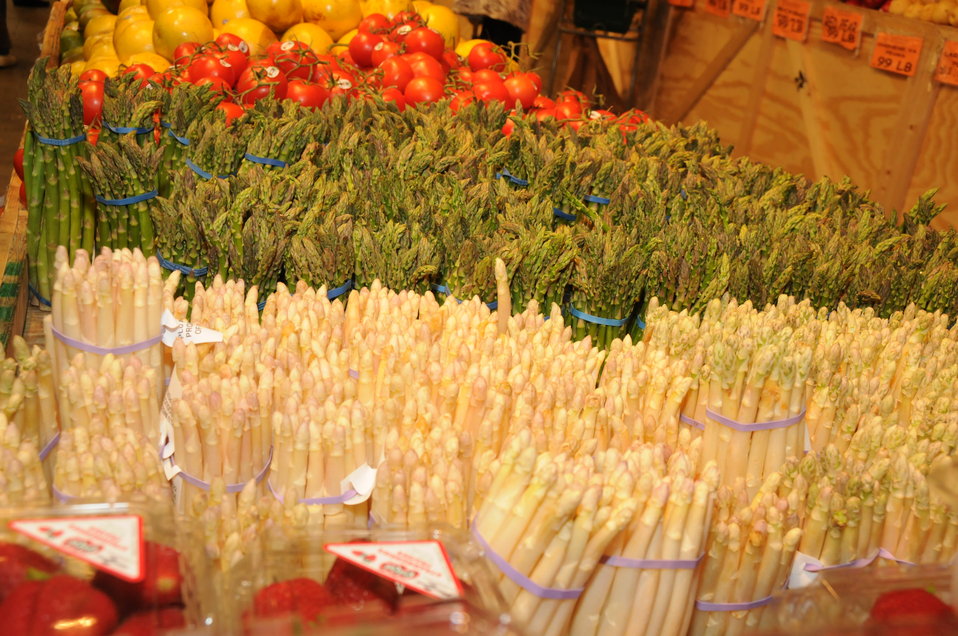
The Reading Terminal Market offers produce fresh from the field to the people of Philadelphia, PA on April 3, 2009. There are Amish specialties, fruits, vegetables, meats, seafood, and poultry. Reading Terminal Market opened for business in 1892 with approximately 78,000 square feet and almost 800 spaces for vendors. The Market was revitalized in the 1990’s and today is still the gastronomic bazaar that its original planners had envisioned. Many of the historic Market stands survived the reconstruction and are once again filled with local produce, fresh eggs, milk, meats, poultry, seafood, handmade crafts, jewelry, and clothing. The Market is home to more than 80 merchants, two of whom are descendants of the original stand holders from a century before.